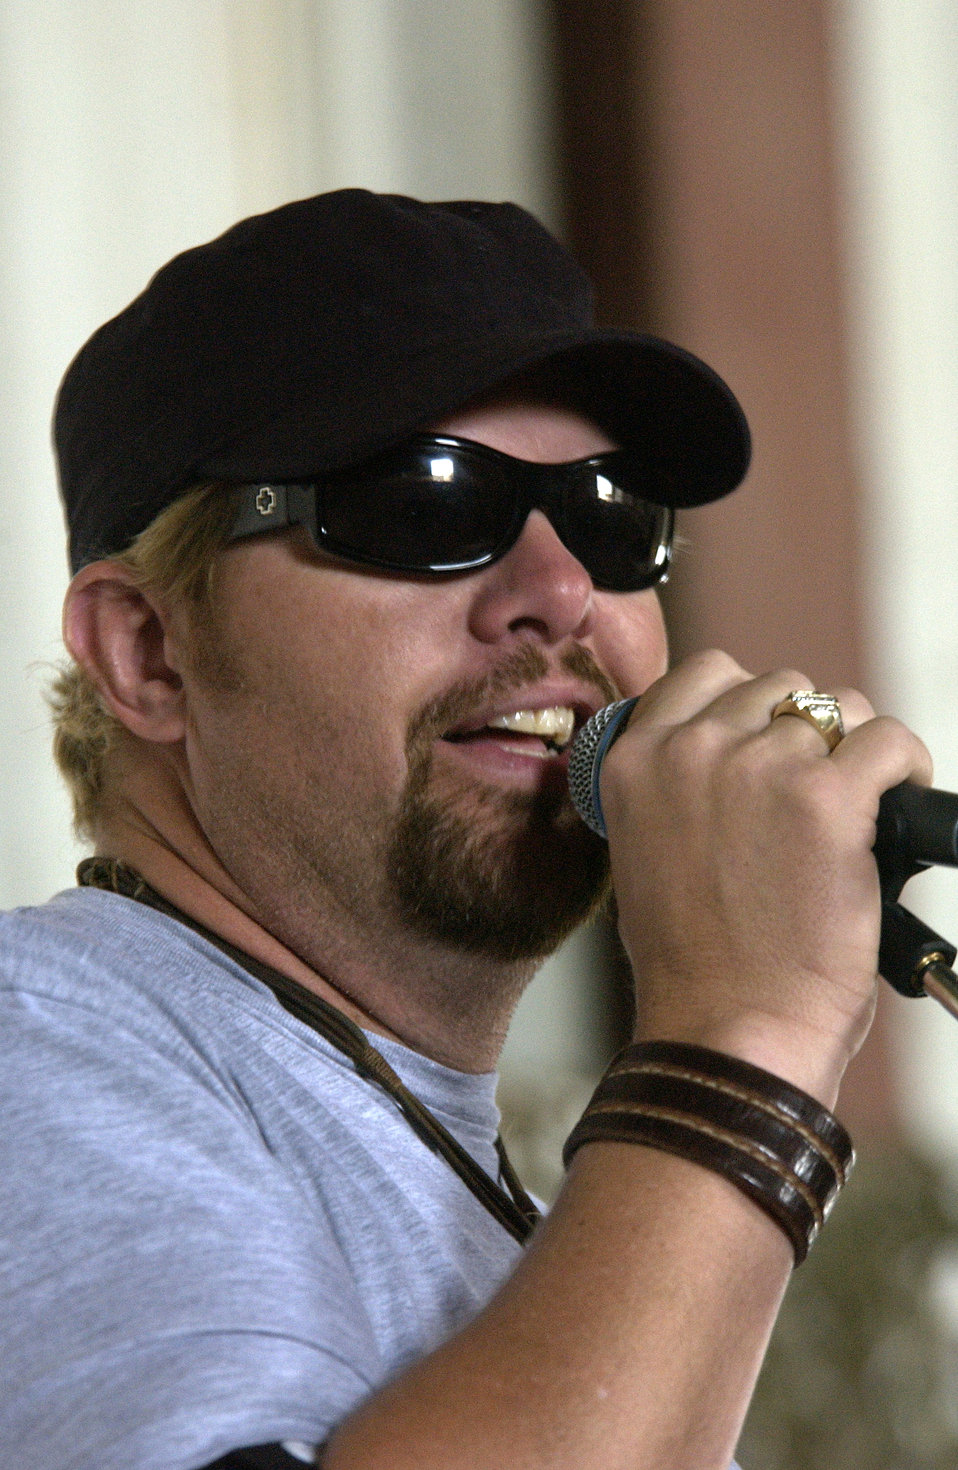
Toby Keith performs for the troops

Country music performer Toby Keith performs for servicemembers at Forward Operating Base Warhorse, Iraq, on Saturday, May 27, 2006. The base in the Diyala Province was the first stop on Mr. Keith's USO tour.